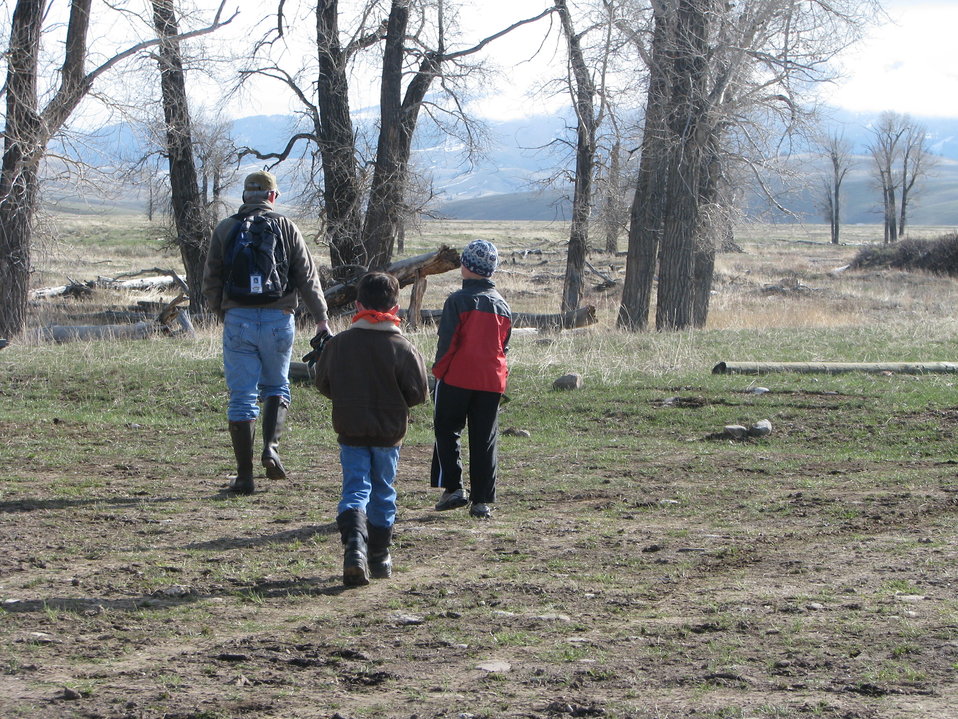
The Search for Antlers

The Boy Scouts are often sent to scour creek banks and bottoms, areas that are difficult for refuge staff to cover earlier in the season with equipment such as trucks and all-terrain vehicles.